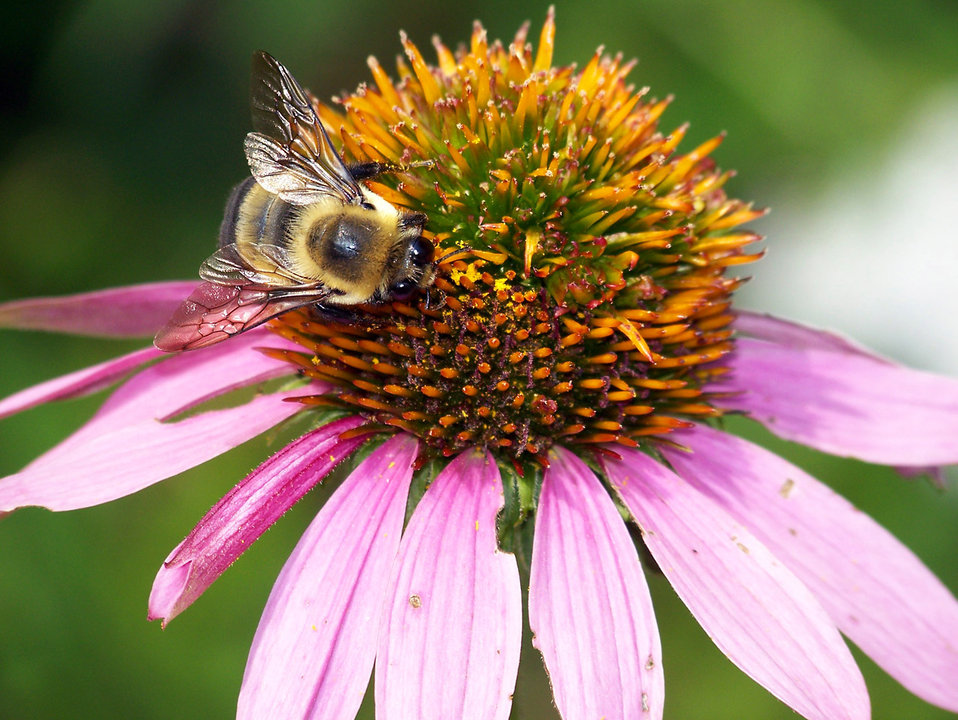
Bumblebee on coneflower

A bumblebee on a pink coneflower.